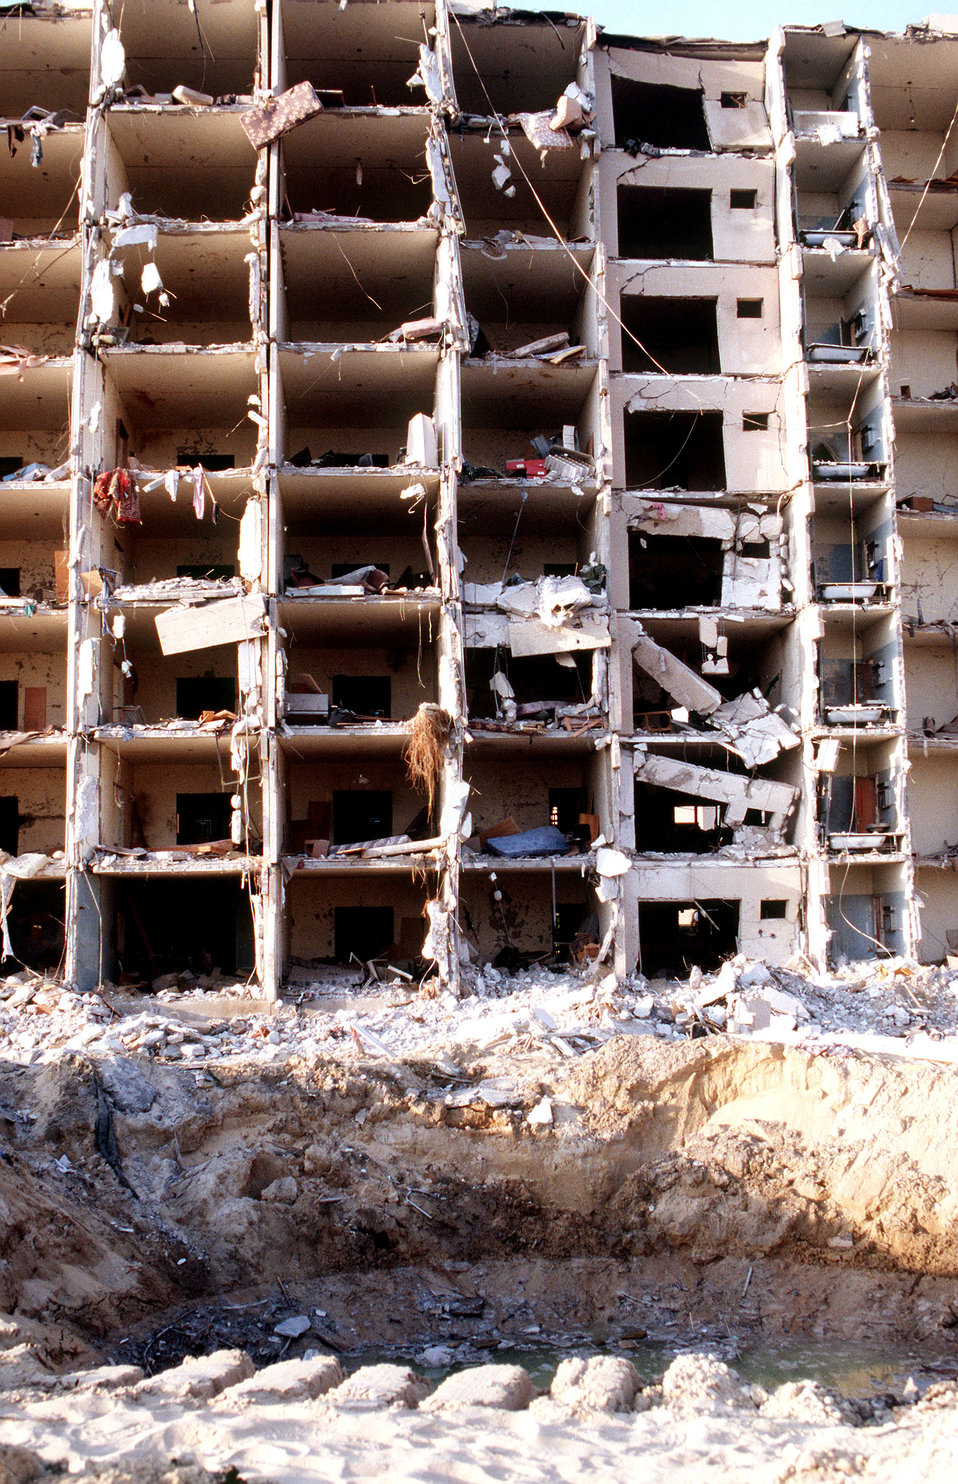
Airmen use lessons learned 10 years after Khobar Towers attack

Nineteen Airmen died and hundreds were injured in the terrorist attack at Khobar Towers in Dhahran, Saudi Arabia, on June 25, 1996. The front of Bldg. 131 was blown off when a fuel truck parked nearby was detonated by terrorists.